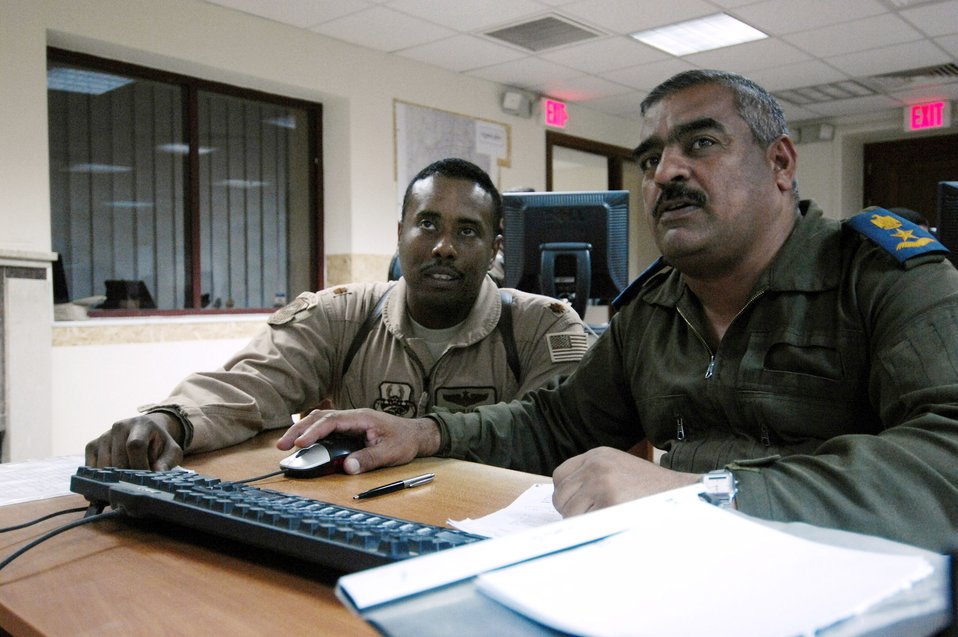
Airmen teach Iraqis Western-style command, control

Maj. Kingston Lampley advises an Iraqi air operations center officer about maintaining an air tasking order at the Iraqi Air Operations Center at Camp Victory, Iraq, May 28. Major Lampley is a military transition team member, advising Iraqi officers concerning the day-to-day operations in their air operations center. The Iraqi AOC is run completely by Iraqi military officers and advised by Air Force military transition team officers. The AOC MTT is responsible for teaching and preparing the Iraqi military to take over AOC operations independent from the U.S. military.